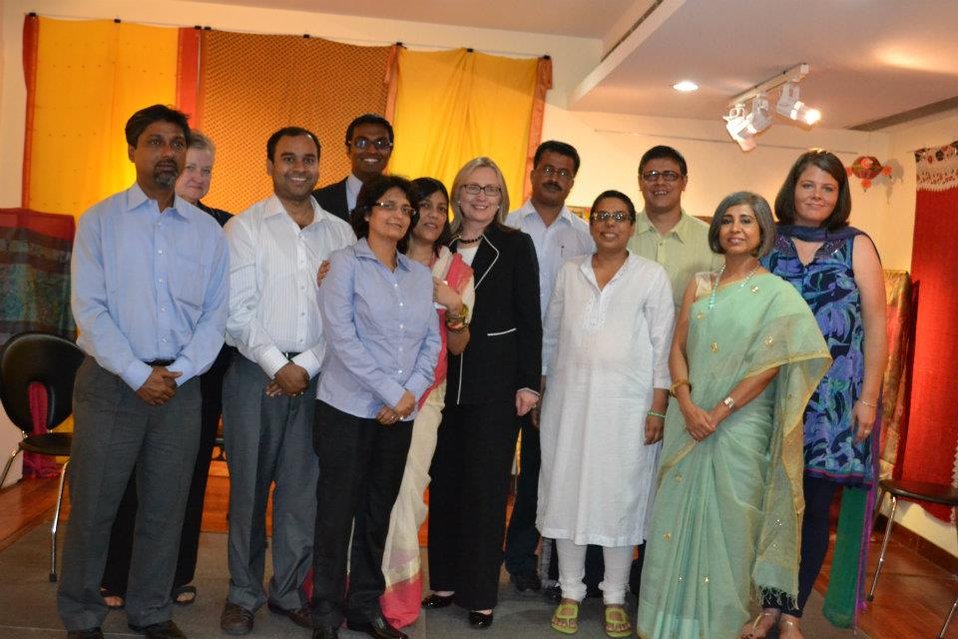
Secretary Clinton Attends the Anti-Trafficking Champions Event

U.S. Secretary of State Hillary Rodham Clinton attends the Anti-Trafficking Champions Event in Kolkata, India, on May 6, 2012.